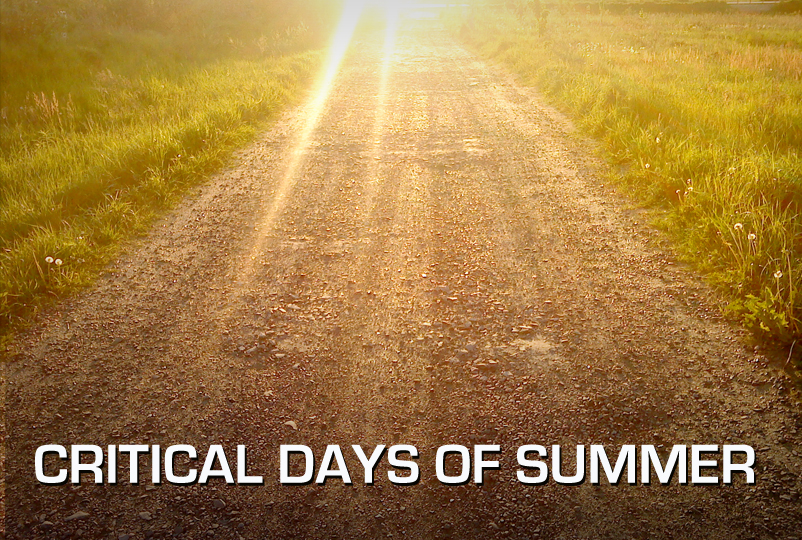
Critical Days of Summer